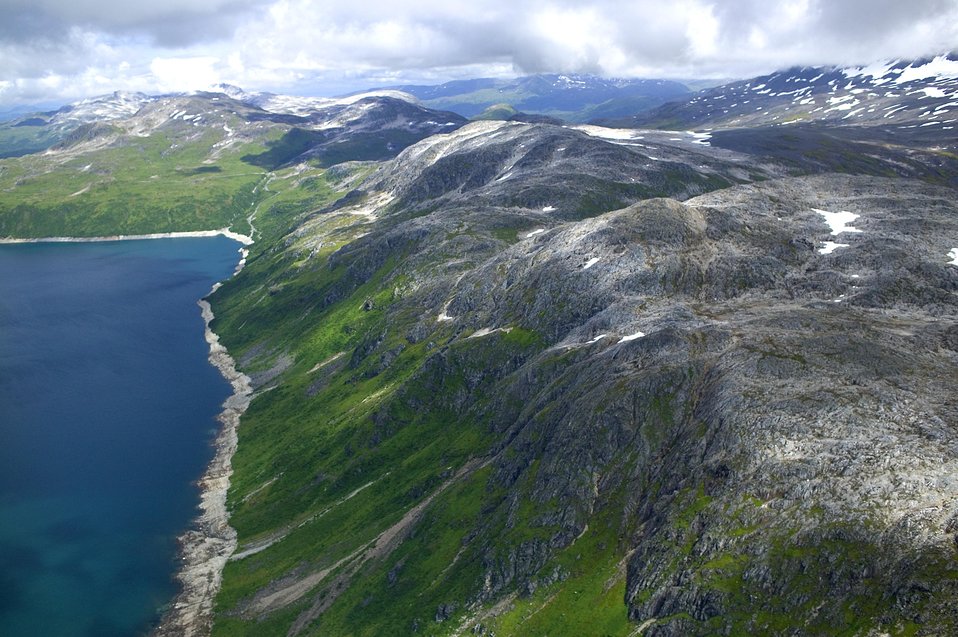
KOD Hildebrand (9)

Kodiak National Wildlife Refuge- Wildlife